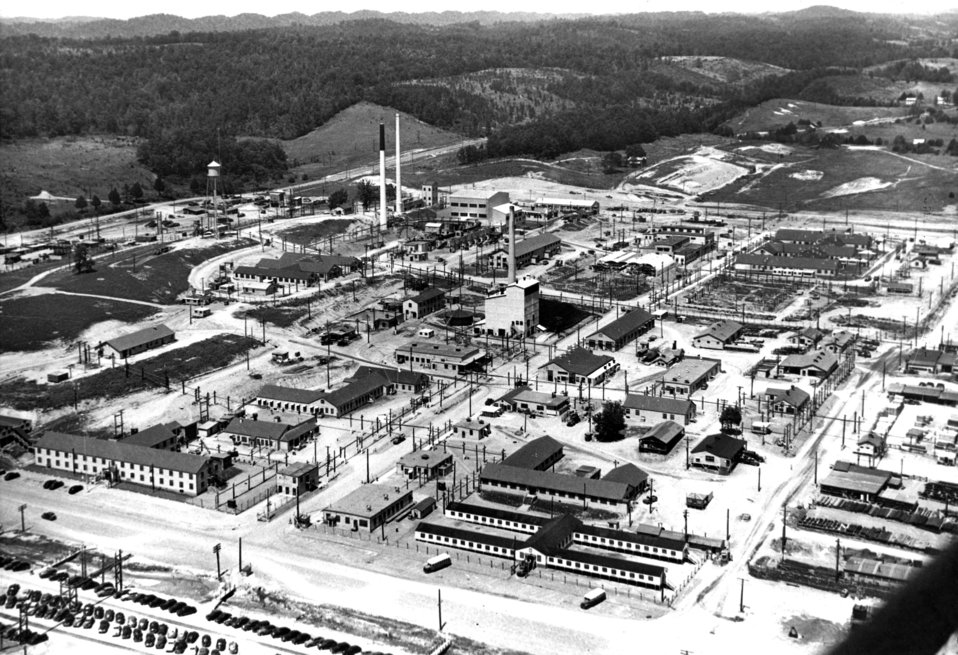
ORNL 1947 Oak Ridge

3558 DOE photo Ed Westcott 1947 Oak Ridge Tennessee